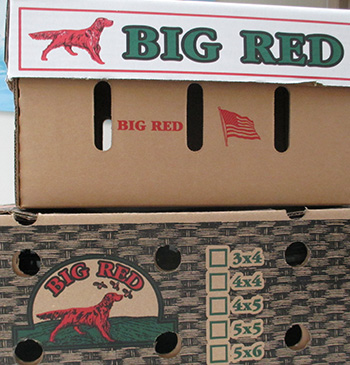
RECALLED – Big Red

February 10, 2014 – Product Recall – Big Red Tomato Packers, LLC Voluntarily Recalls Fresh Tomatoes Due to Possible Risk of Contamination from Salmonella .